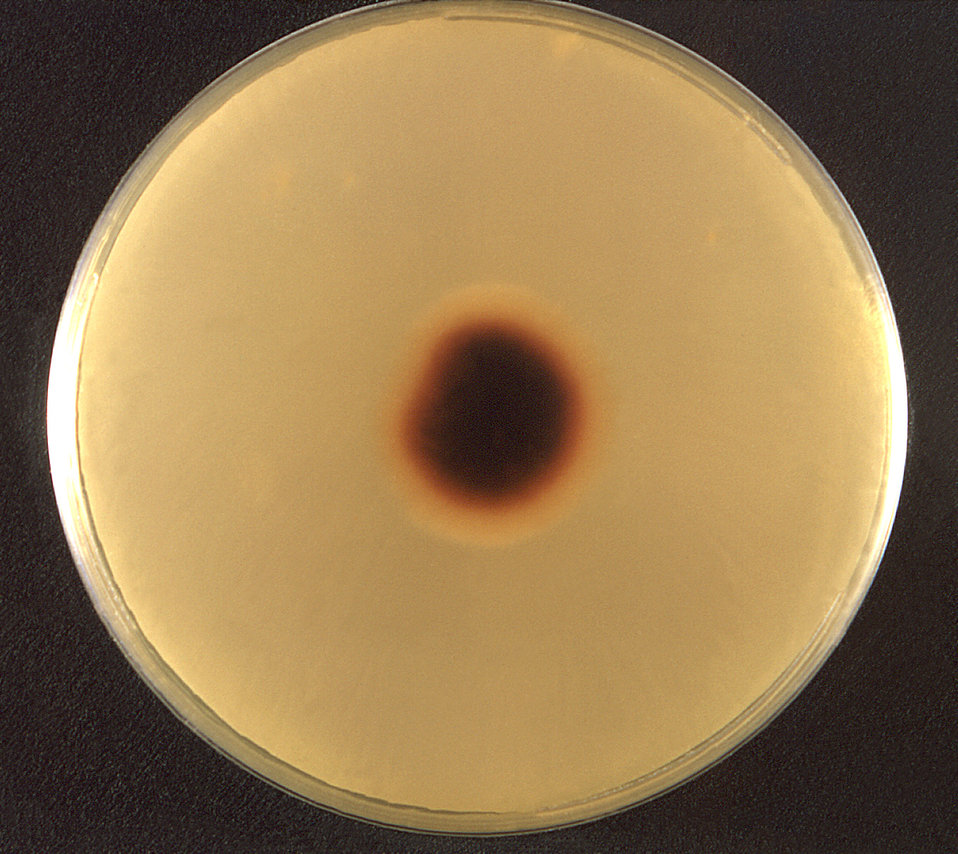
This is the reverse view of a Sabouraud's dextrose agar plate culture growing a colony of Trichophyton rubrum var. granulare. For a frontal view of this colony's appearance, see PHIL 10941.